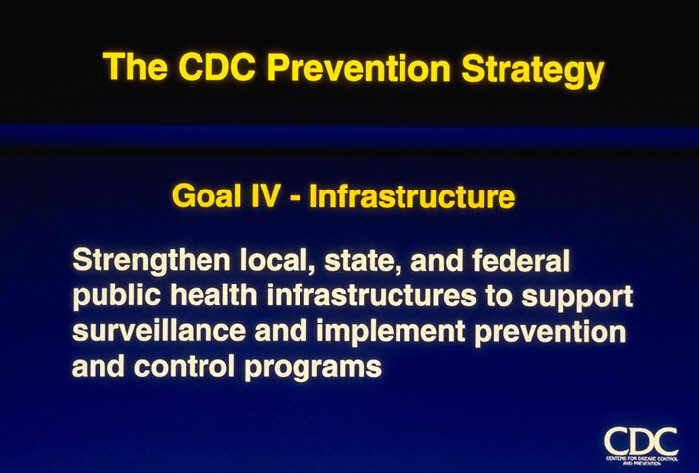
The CDC Prevention Strategy: Goal IV--Infrastructure (text)